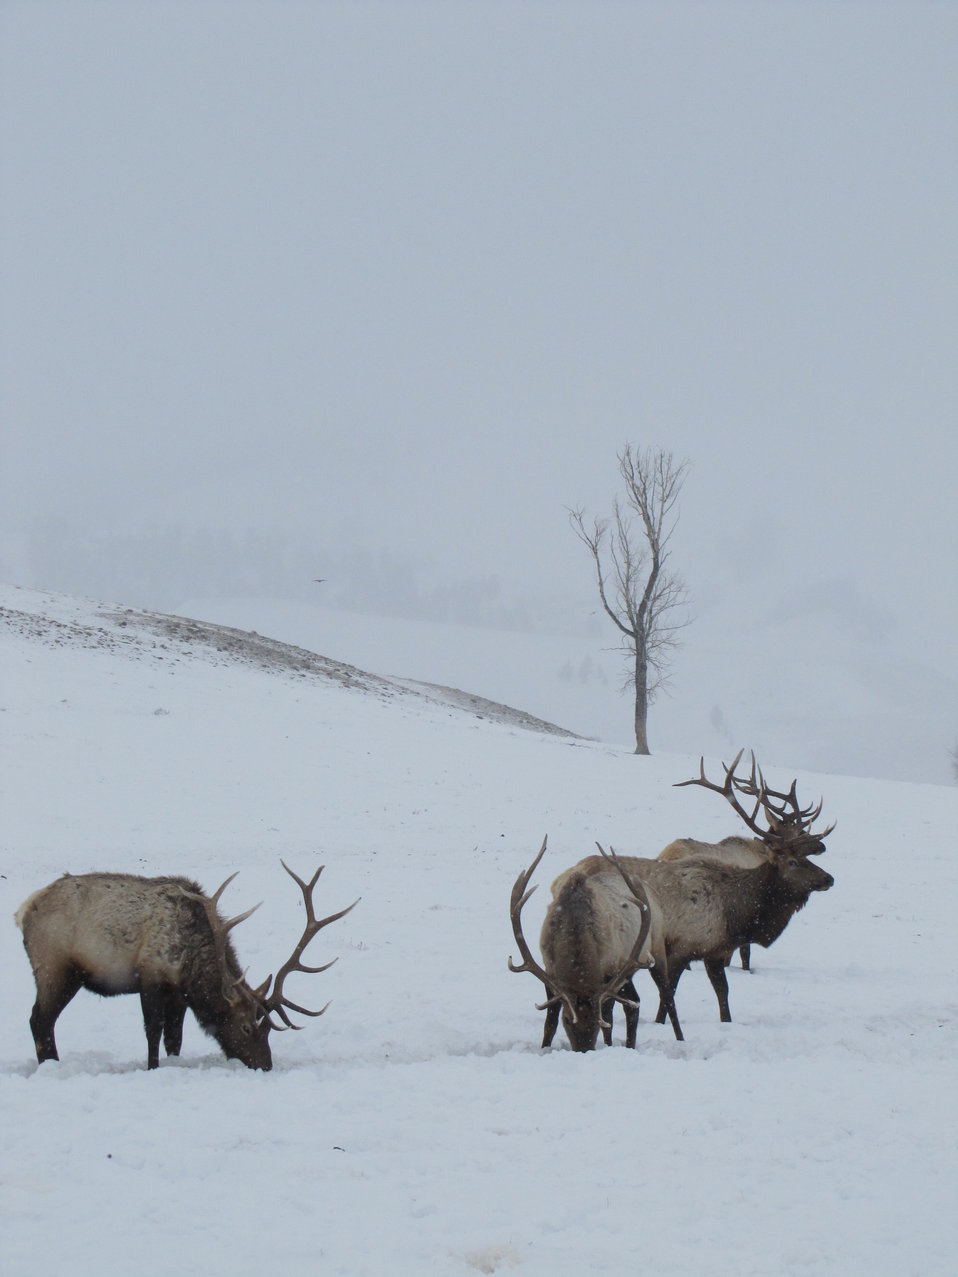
Waiting Out the Storm

A group of bull elk wait out a February storm on the National Elk Refuge.